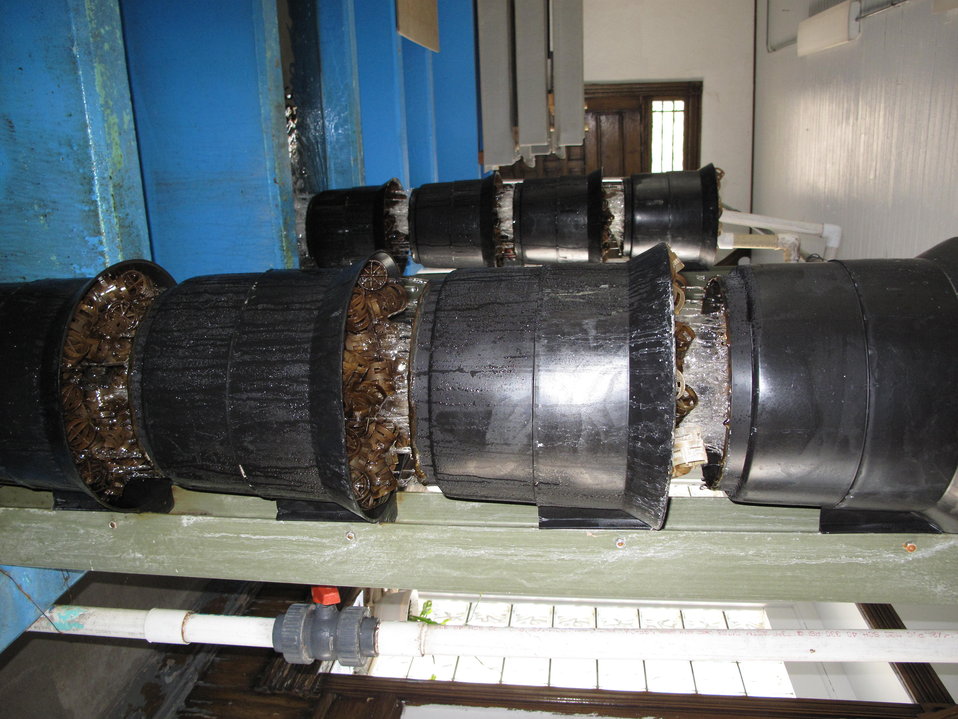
Leadville National Fish Hatchery

Scientists have determined that 4 buckets of Knoch rings are necessary to make the water ready for the young fish.